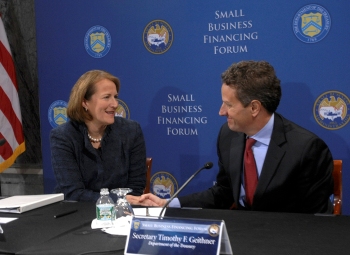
Treasury and SBA Host a Small Business Financing Forum

Treasury and the Small Business Administration will take the ideas shared at the forum and deliver a small business report to President Obama.